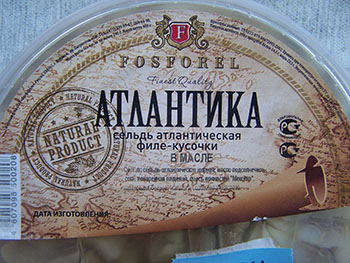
RECALLED - Herring Fillet in Oil

November 25, 2013 – Product Recall – Zip International Group LLC Recalls Herring Fillet in Oil Due to Potential Health Risk.